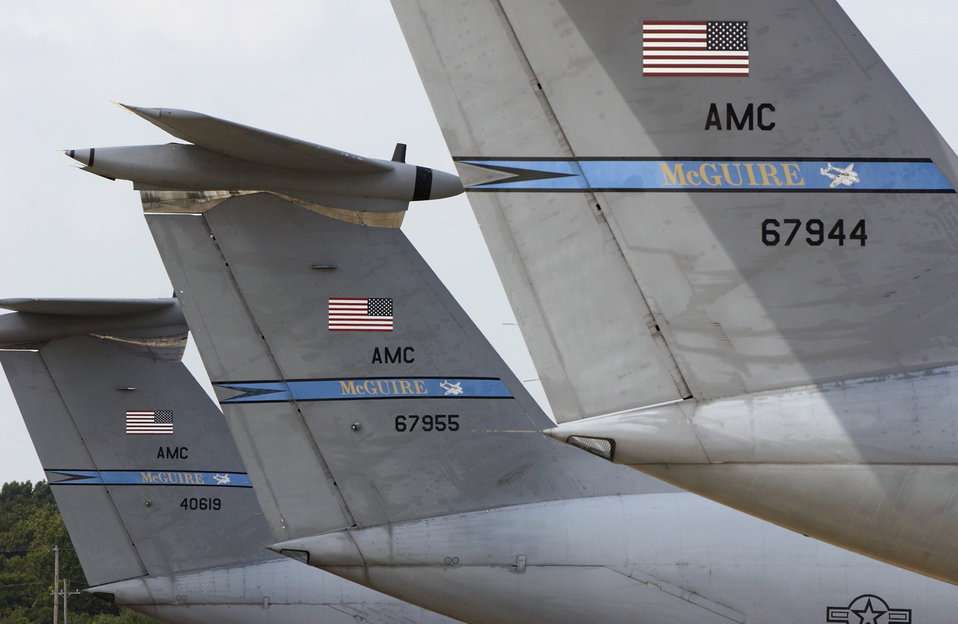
When it's over

MCGUIRE AIR FORCE BASE, N.J. - Sitting on the flightline here these C-141B Starlifters are being retired from the active- duty Air Force inventory on Sept. 16. After 40 years of service and nearly nine million flying hours, the aircraft has a proven reliability and long-range capability in worldwide airlift for combat support missions, and to humanitarian relief.